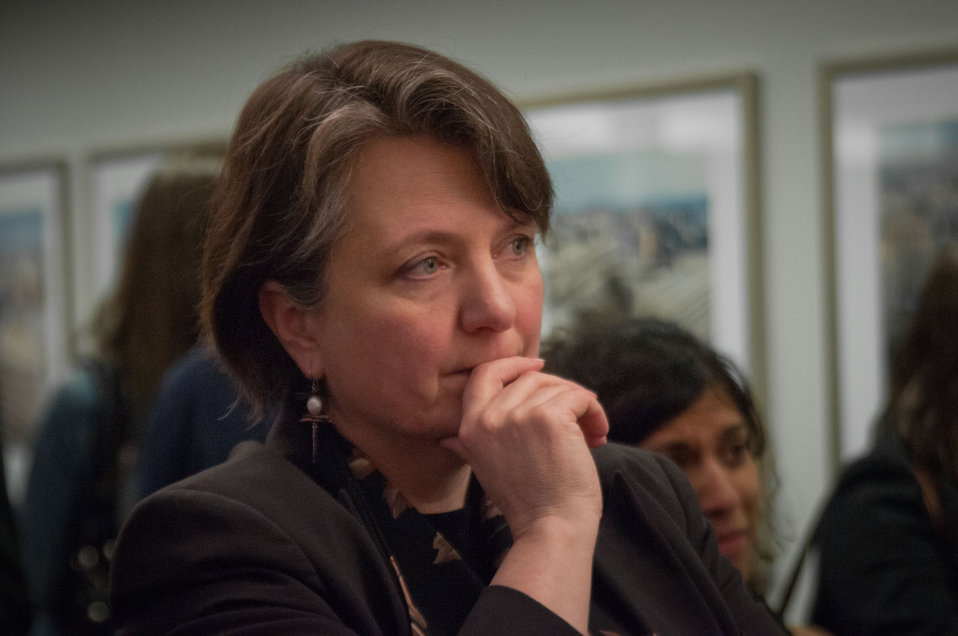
Agriculture Deputy Secretary Kathleen Merrigan listens to Farmers Restaurant Group Concept Developer and Managing Partner Dan Simons welcome the participants of the “Shaping the Farm Bill for a Sustainable Future” Forum in the Jack Morton Auditorium, at the Trachtenberg School of Public Policy and Public Administration, on the George Washington University campus in Washington, D.C., on Thursday, March 1, 2012.